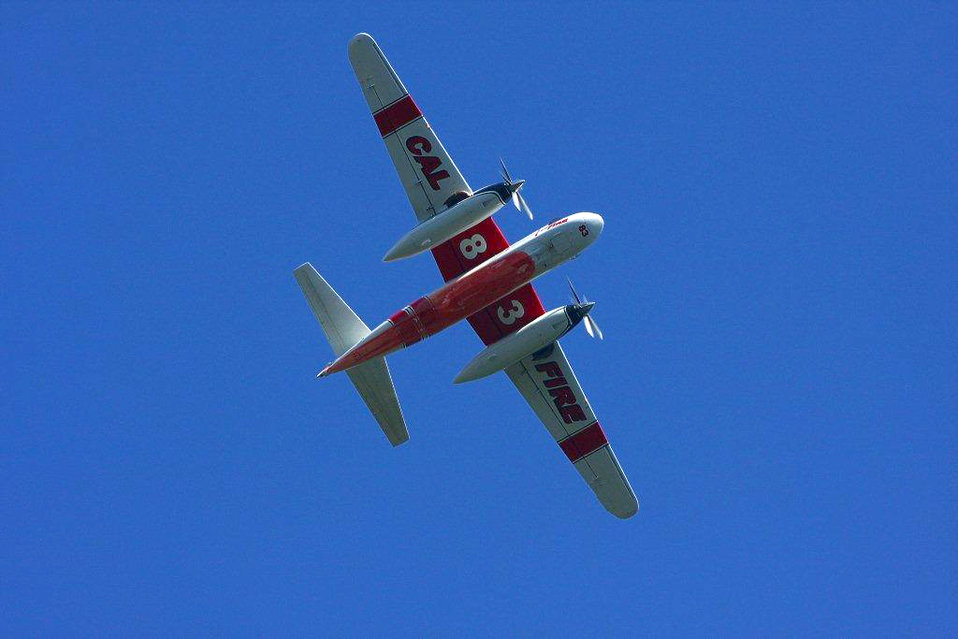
A DC-10 makes a drop on the Power Fire in California. The Power Fire in the Stanislaus National Forest near Beardsley Reservoir in California began on Aug. 5, 2013 is under investigation. The fire has consumed 881 acres and is 32% contained.